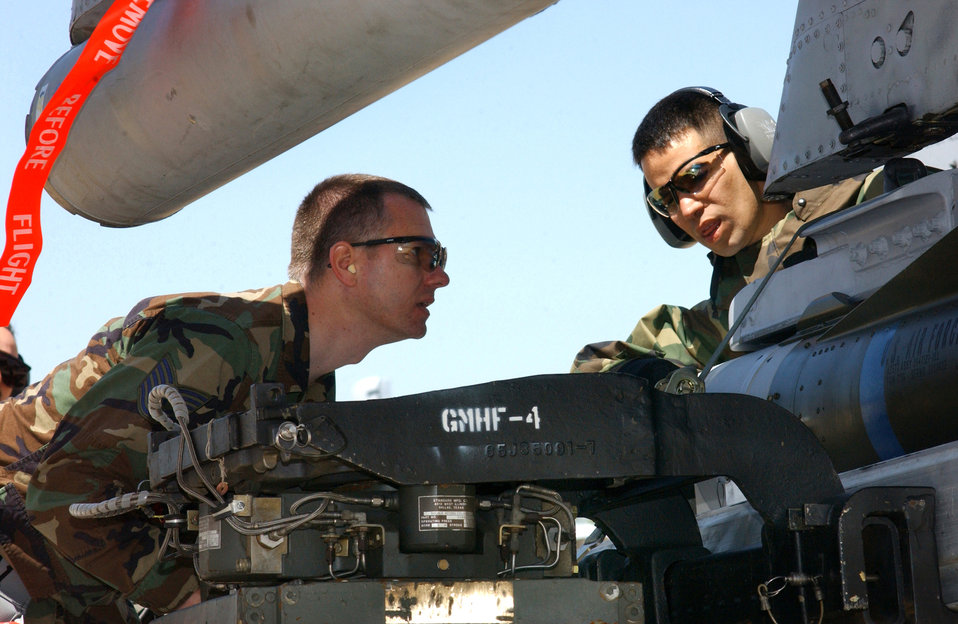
Operation ready

Tech. Sgt. Scott Edsell (left) and Senior Airman Daniel Bonora prepare to mount an AGM 65 Maverick missile on an A-10 Thunderbolt II during the first phase of an operational readiness inspection at Willow Grove Air Reserve Station, Pa., on Saturday, April 29, 2006. Sergeant Edsell and Airman Bonora are with the Pennsylvania Air National Guard's 111th Maintenance Squadron.